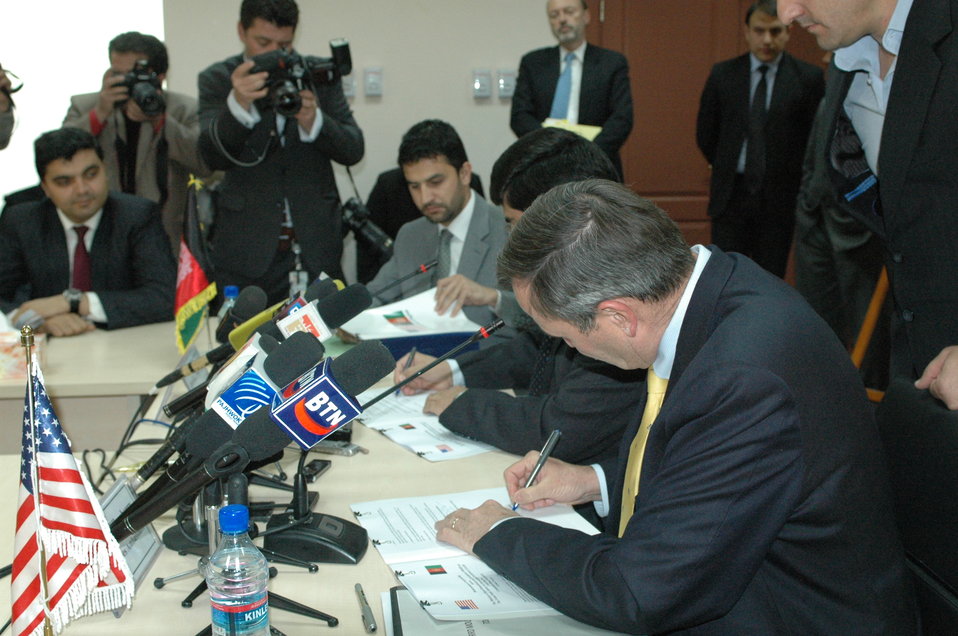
Community Based Stabilization Grants Ceremony, December 7, 2010